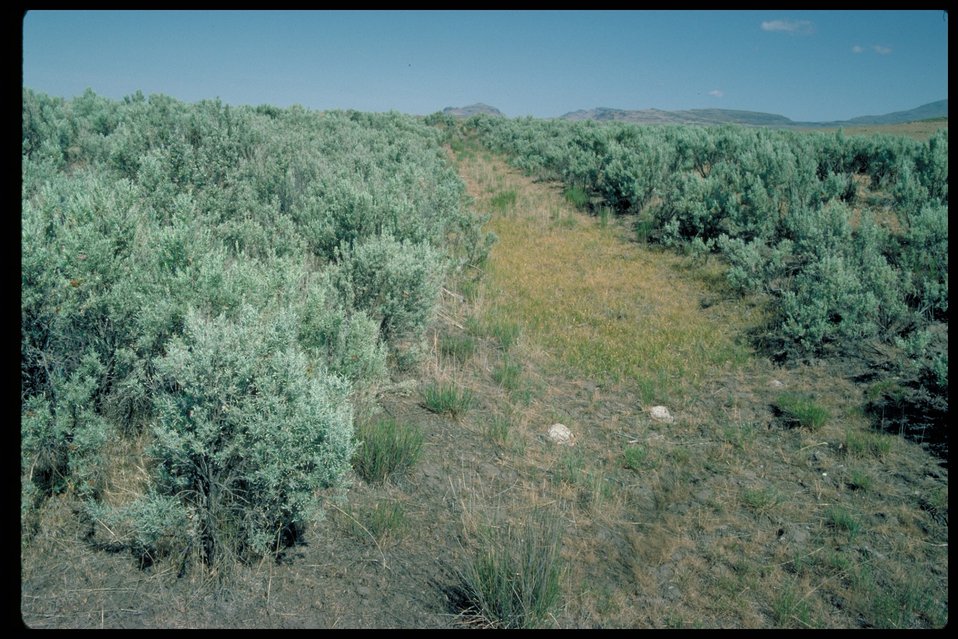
Oregon Trail near Rye Grass Creek Lower Snake River District